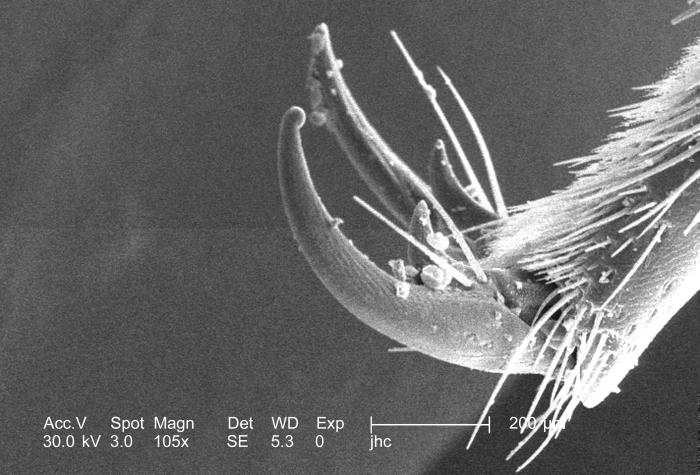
At a low magnification of 105x this scanning electron micrograph (SEM) depicted some of the morphologic details found at the distal end of a leg of a carpenter bee, Xylocopa virginica. Note the configuration of what is known as the "tarsal claw", used by the bee to grasp objects in its environment while obtaining food, or tunneling a nest. The "hairs" on the bee's leg, are not hairs in the mammalian sense, but rather than being composed of keratin, these hair-like structures are composed of "chitin", a polysaccharide, i.e., complex carbohydrate molecule, composed of monosaccharides joined together by glycosidic bonding. These hairs are sensorial, as well as protective, both insulating the bee from thermal changes in its environment, and possible physical assaults.